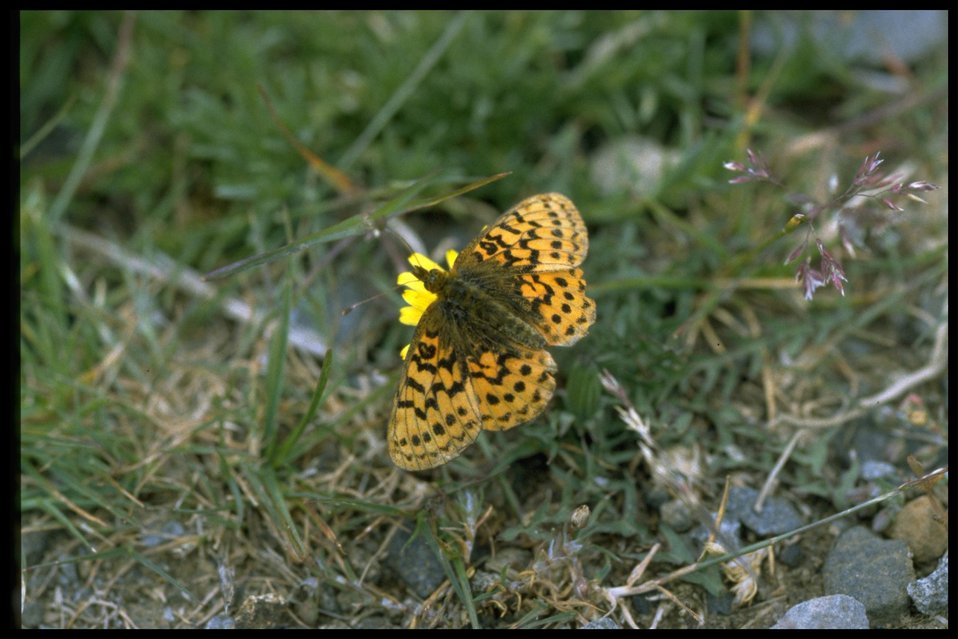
Medium shot of butterfly and wildflower.